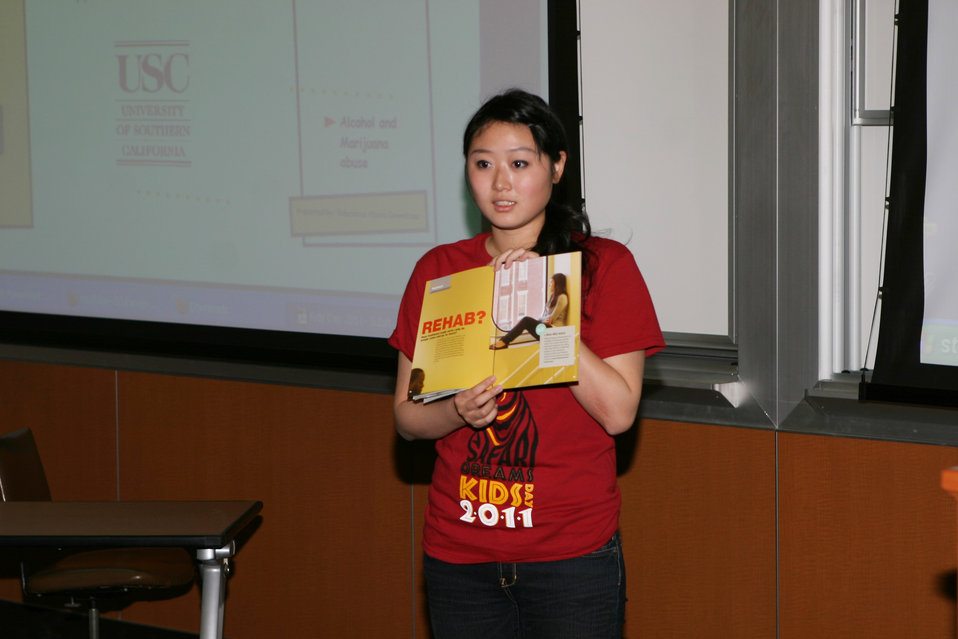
Kids Day 2011 - Substance Abuse

Kids Day at the USC School of Pharmacy. Around 120 kids from El Sereno Middle School participated this event.